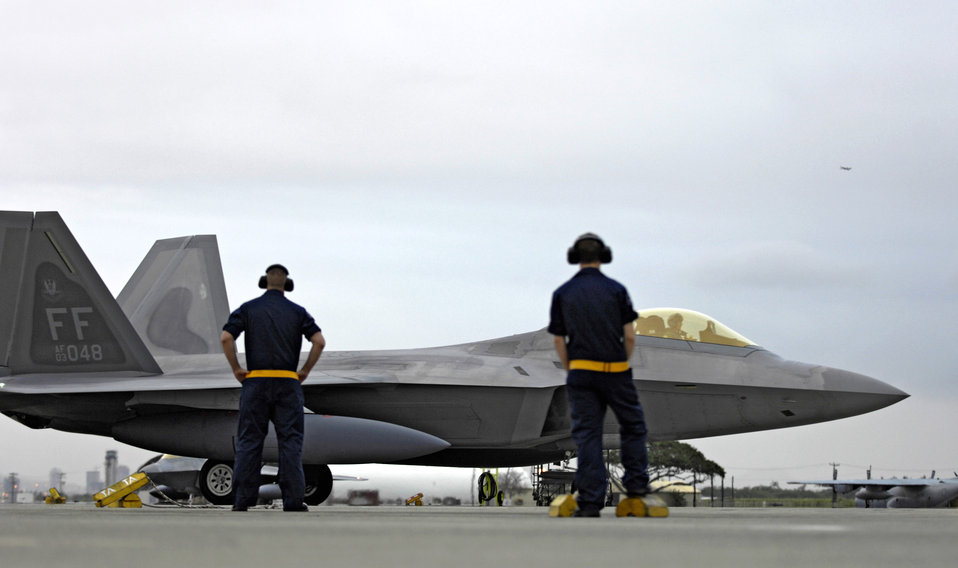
F-22 begins first overseas deployment

Two crew chiefs watch as an F-22 Raptor taxis to its parking spot Feb. 7 at Hickam Air Force Base, Hawaii. The F-22s and more than 250 Airmen from the 27th Fighter Squadron at Langley Air Force Base, Va., are bound for Kadena Air Base, Japan, for the aircraft's first overseas operational deployment.